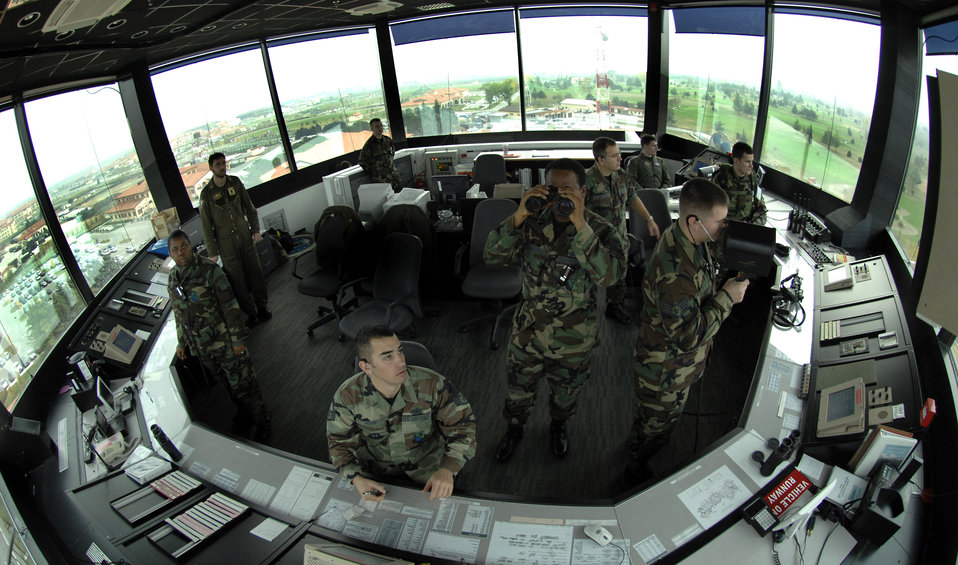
Tower stays on top of things

The air control tower is abuzz with activity as Italian air force and U.S. Air Force air traffic controllers direct multiple flights of fighters Nov. 28 at Aviano Air Base, Italy. Air traffic controllers perform duties within a radar facility and maintain radar surveillance of approach control airspace, processing and coordinating aircraft through terminal control.